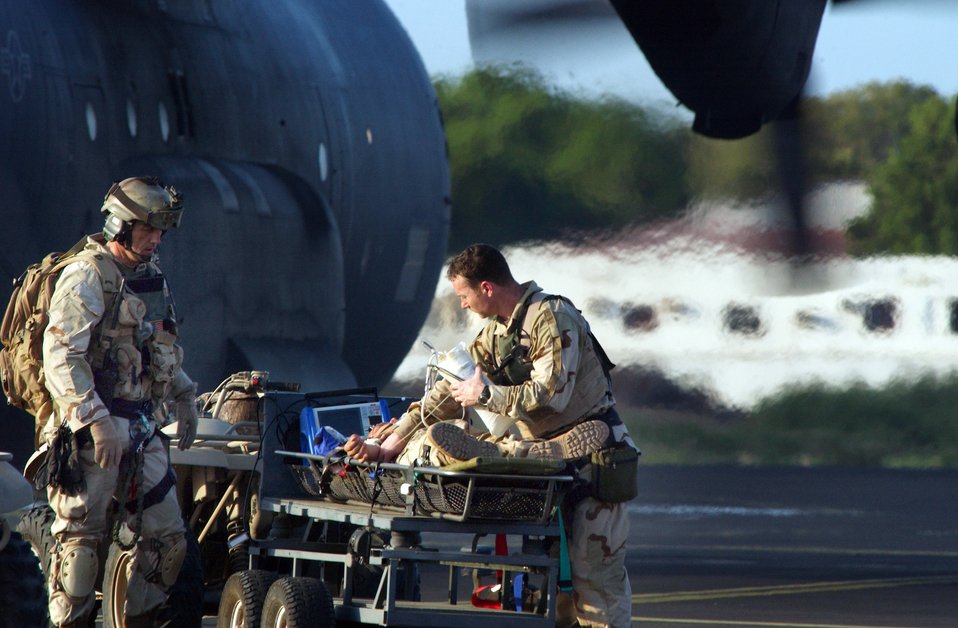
Patient rescue exercise

CAMP LEMONIER, DJIBOUTI, Africa (AFPN) -- Air Force pararescuemen prepare a patient to be loaded onto the C-130 Hercules during a simulated patient rescue exercise here Feb. 12.